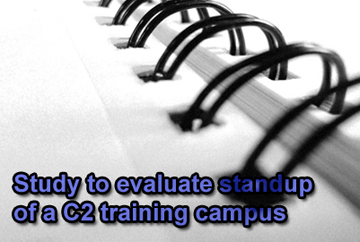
C-2 study